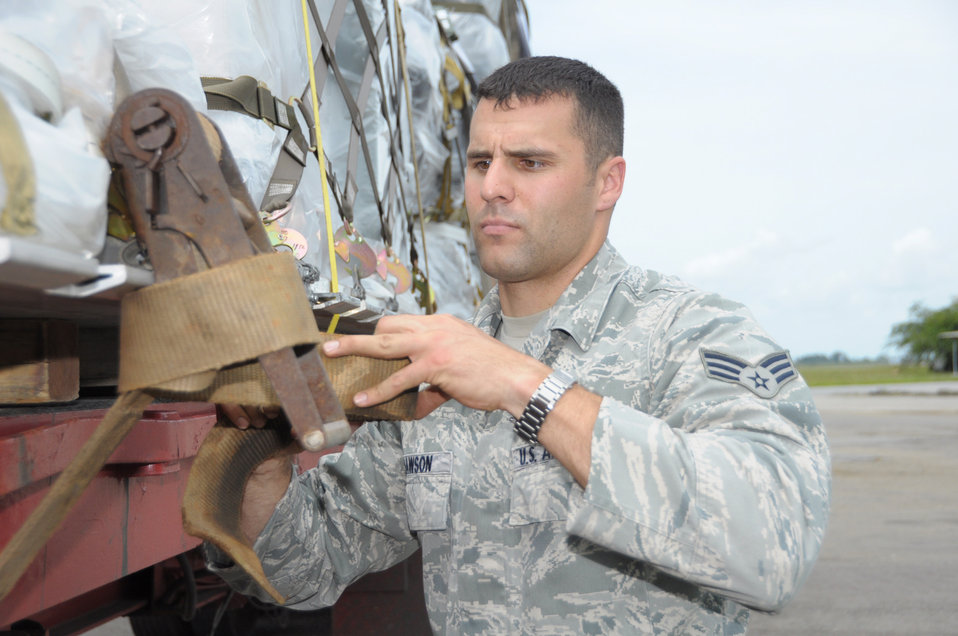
Airmen participate in humanitarian exercise in Trinidad and Tobago

Senior Airman Nicholas Dawson fastens straps down medical supplies on a truck April 8, 2011, in Trinidad and Tobago. Airman Dawson is a part of the Expeditionary Medical Support Health Response Team in support of the Allied Forces Humanitarian Exercise/Fuerzas Aliadas. Airman Dawson is a 60th Medical Group medical technician.